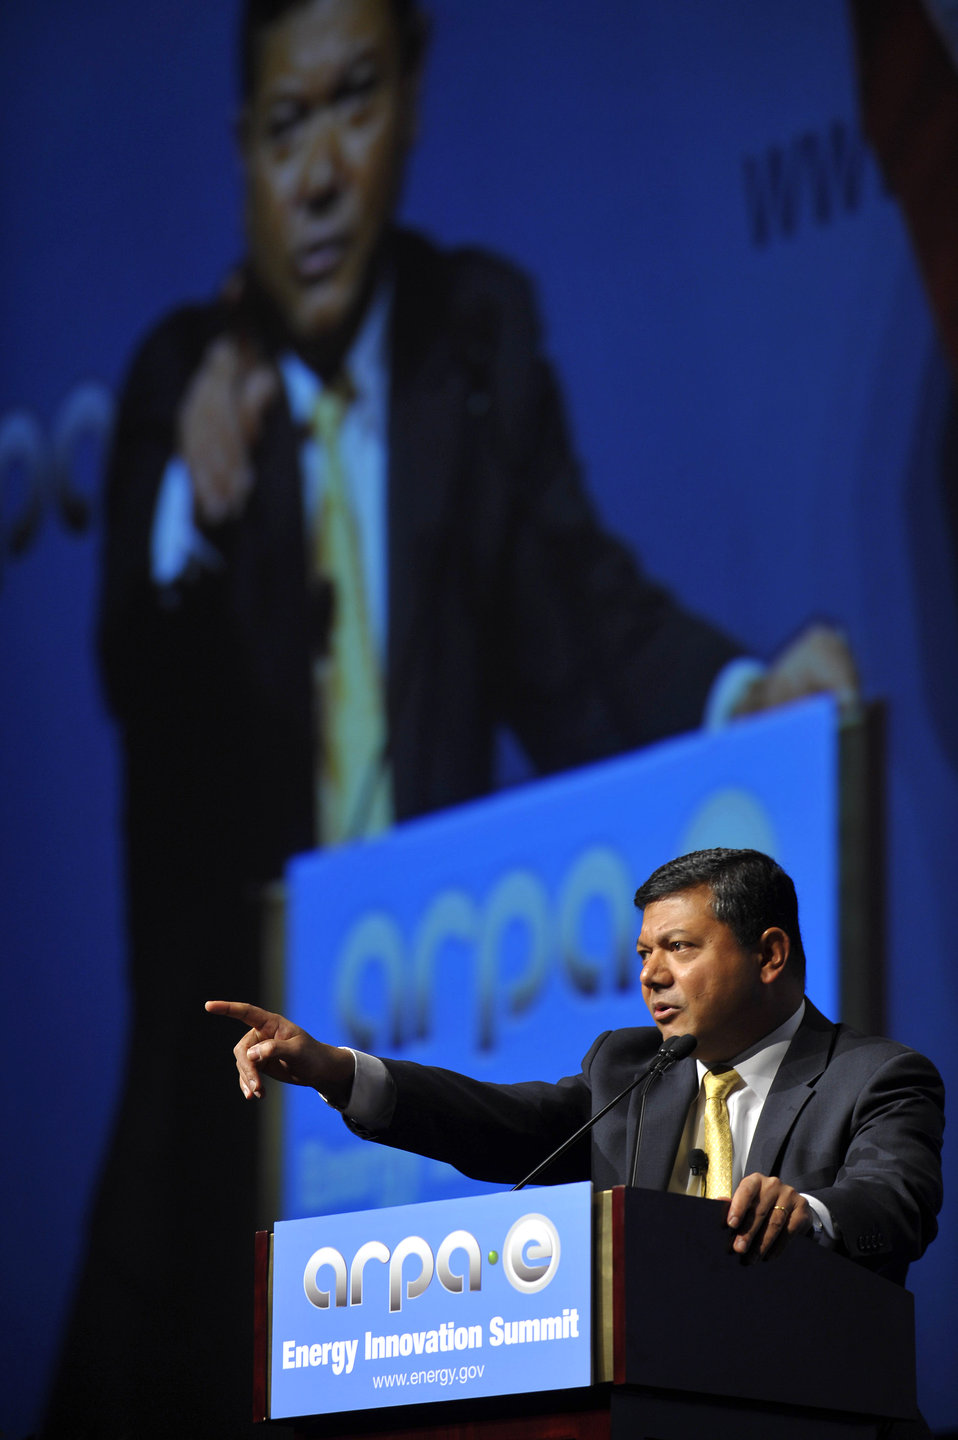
ARPA-E Energy Innovation Summit 2011, 65 of 83

Dr. Arun Majumdar, Director, ARPA-E.